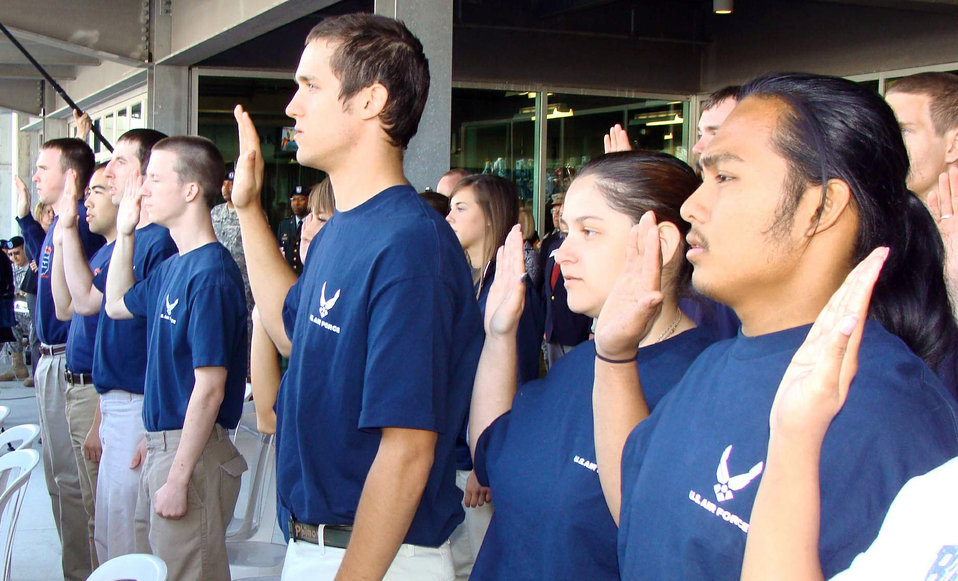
Air Force makes Indy 500 debut

Six members of the Air Force delayed entry program recite the oath of enlistment administered by Indiana Senator Richard Lugar during a ceremony May 17 at the Indianapolis Motor Speedway. The speedway recognizes the contributions of military men and women annually during Armed Forces Day weekend. The Indianapolis 500 May 24 features the debut of an Air Force-themed Indy car driven by rookie Rafael Matos, who qualified 12th and starts from the fourth row.